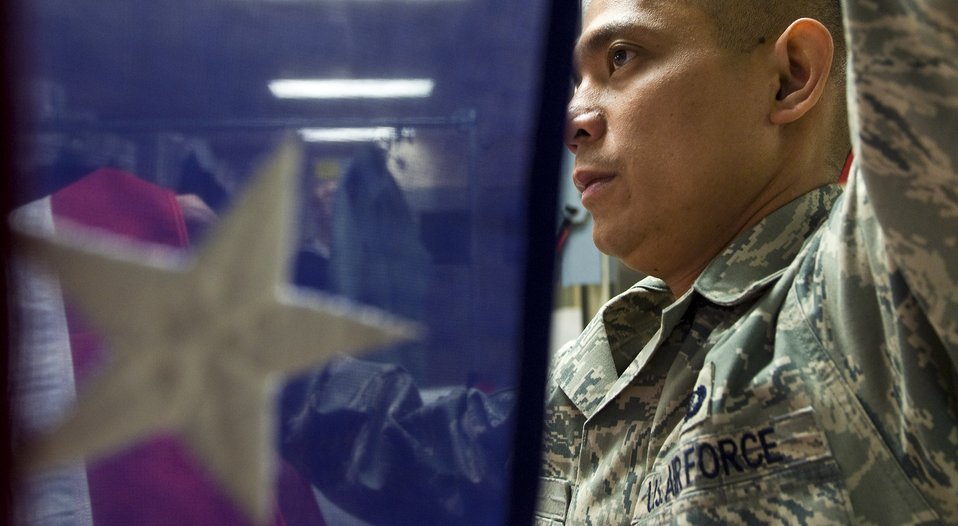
Dignified Transfer of Remains

Tech. Sgt. Willard Rico feeds a U.S. flag into a pressing machine March 31 at the Charles C. Carson Center for Mortuary Affairs, Dover Air Force Base, Del. The press irons the flags wrinkle free that will be placed over caskets during the dignified transfer of remains. The center is the Defense Department's largest joint-service mortuary facility and the only one in the continental United States. Sergeant Rico is deployed from the 60th Force Support Squadron, Travis AFB, Calif.